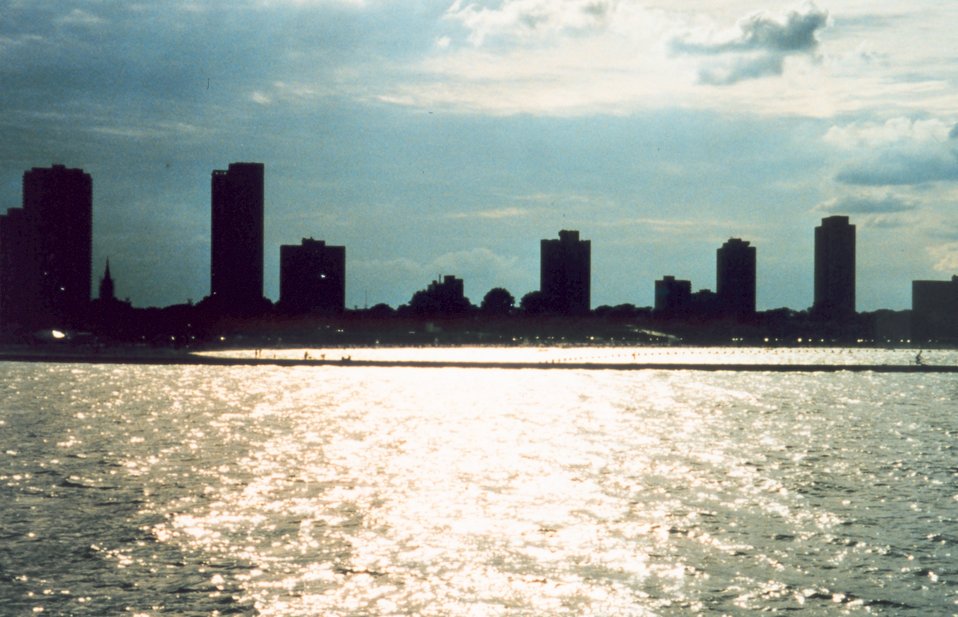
Lake Michigan waterfront